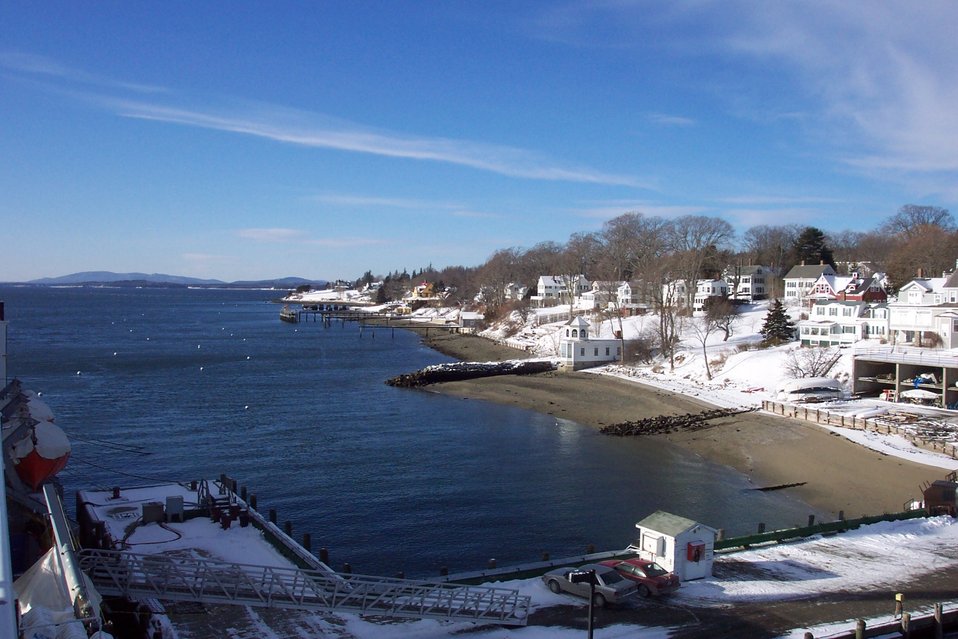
Looking west along the Castine shoreline.